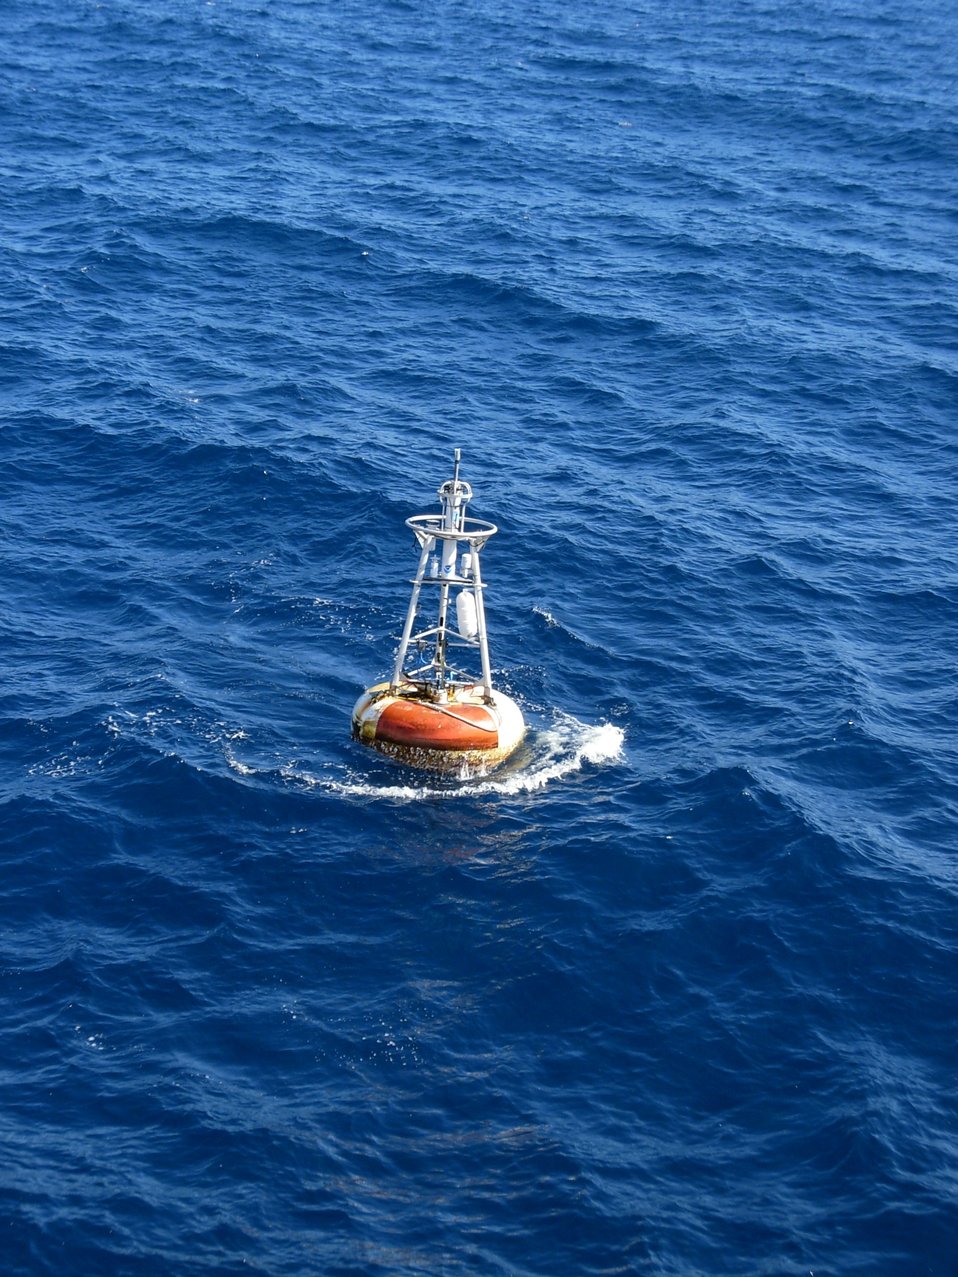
TAO buoy operations off the NOAA Ship Ka'imimoana